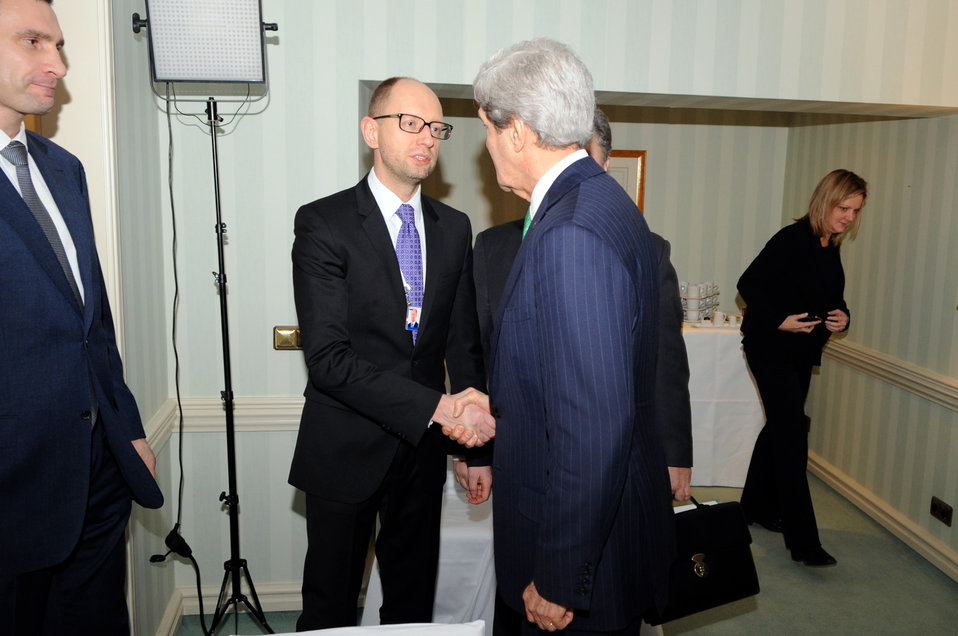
Secretary Kerry Meets Fatherland Party's Yatsenyuk Before Session with Ukranian Opposition Leaders

U.S. Secretary of State John Kerry shakes hands with Arseniy Yatsenyuk of the Fatherland Party before a meeting with Ukrainian opposition leaders on the sidelines of the Munich Security Conference in Munich, Germany, on February 1, 2014.